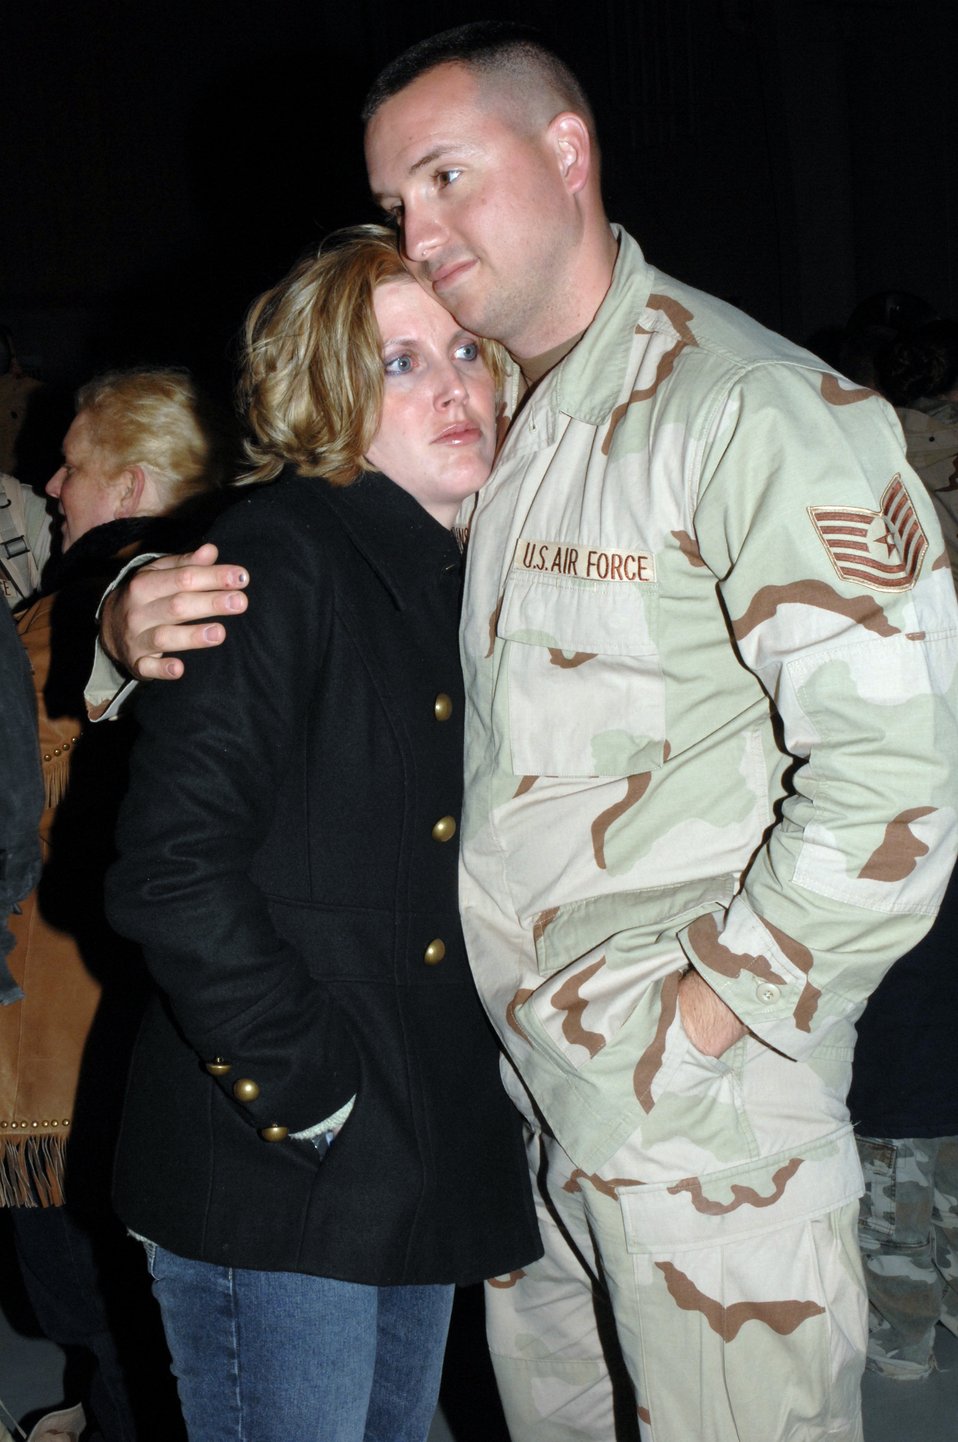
Welcome home

Tech. Sgt. Lee Robbins takes a moment with wife, Staff Sgt. Amber Robbins, at a homecoming ceremony Jan. 18 at Cannon Air Force Base, N.M. He and other Airmen from Cannon Air Force Base, N.M. were serving in Iraq as part of the Air Expeditionary Force 3 and 4 rotation. He is assigned to the 27th Aircraft Maintenance Squadron and she is assigned to the 27th Mission Support Squadron.